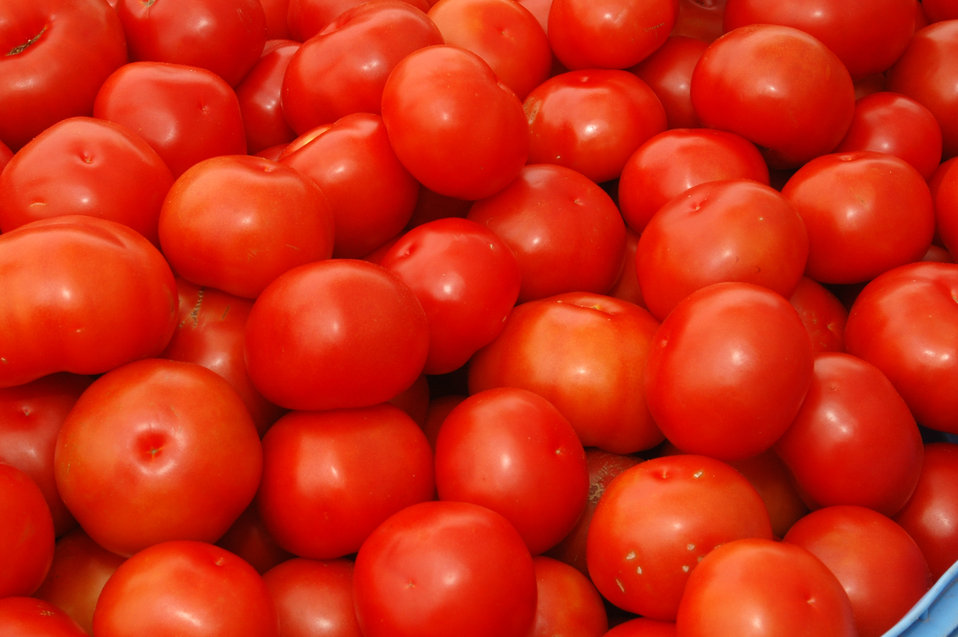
Tomatoes for sale at the U.S. Department of Agriculture (USDA) Farmer’s Market held in the East parking lot of the USDA's Whitten Building in Washington, D.C. on June 2, 2006.